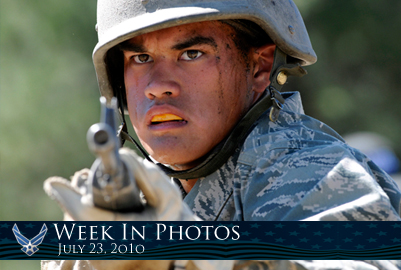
Air Force Week in Photos for July 23, 2010, highlights photos from around the Air Force. In this photo by J. Rachel Spencer, U.S. Air Force Academy Basic Cadet Ryan Mavity focuses on the instructor while learning how to handle an M-16 rifle during the second phase of Basic Cadet Training at Jacks Valley, Colo., July 16, 2010.